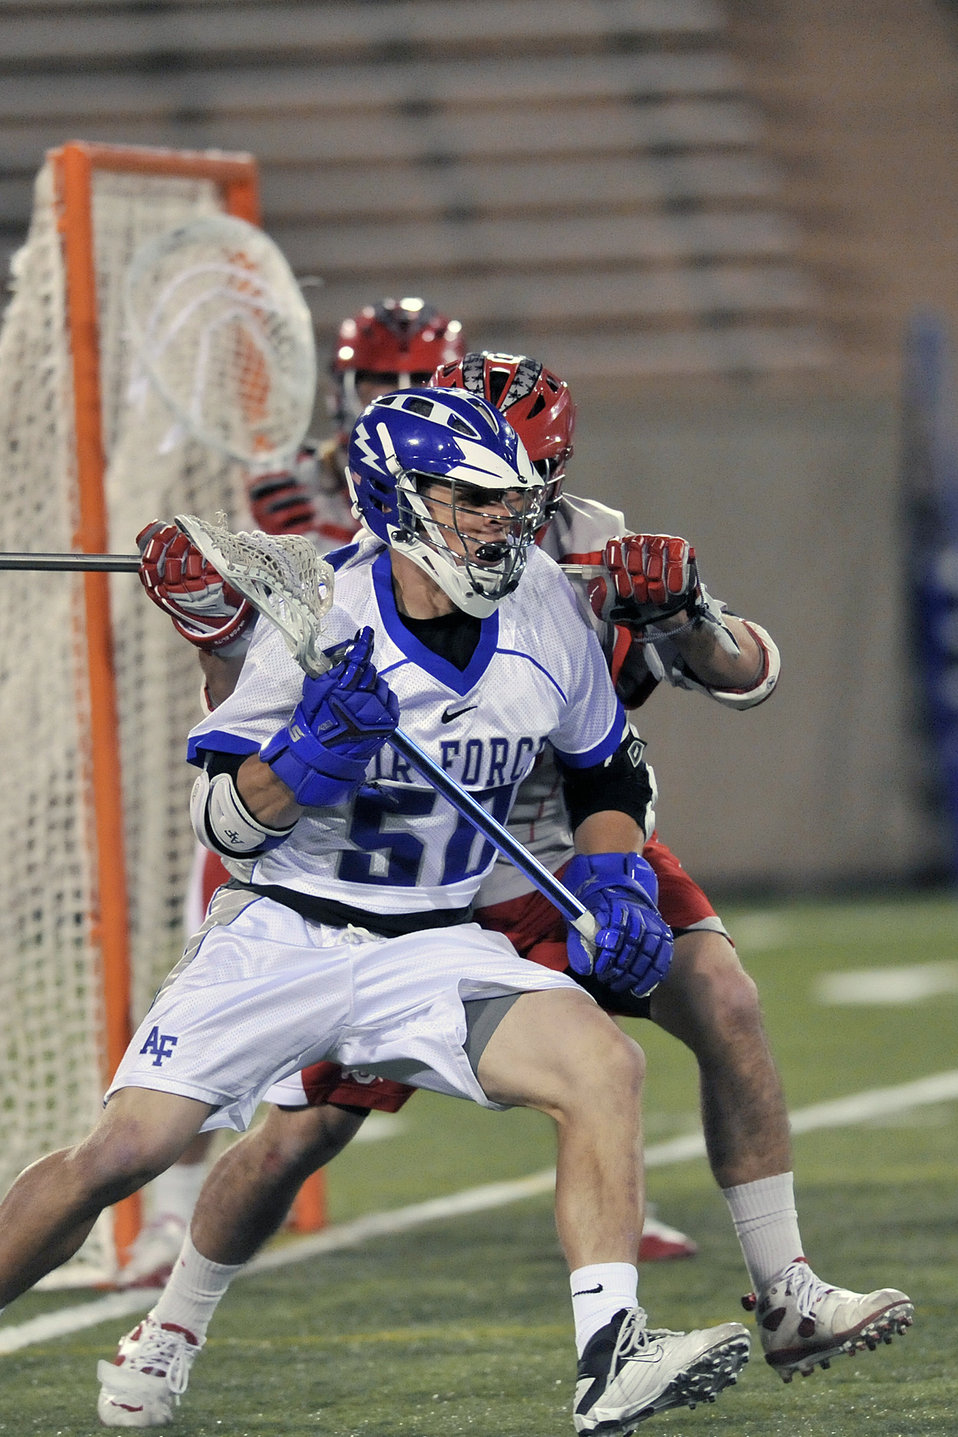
Falcons vs. Buckeyes

Falcons senior midfielder Vincent Sandtorv advances on the goal against the Ohio State Buckeyes April 17, 2011, at Falcon Stadium in Colorado Springs, Colo.